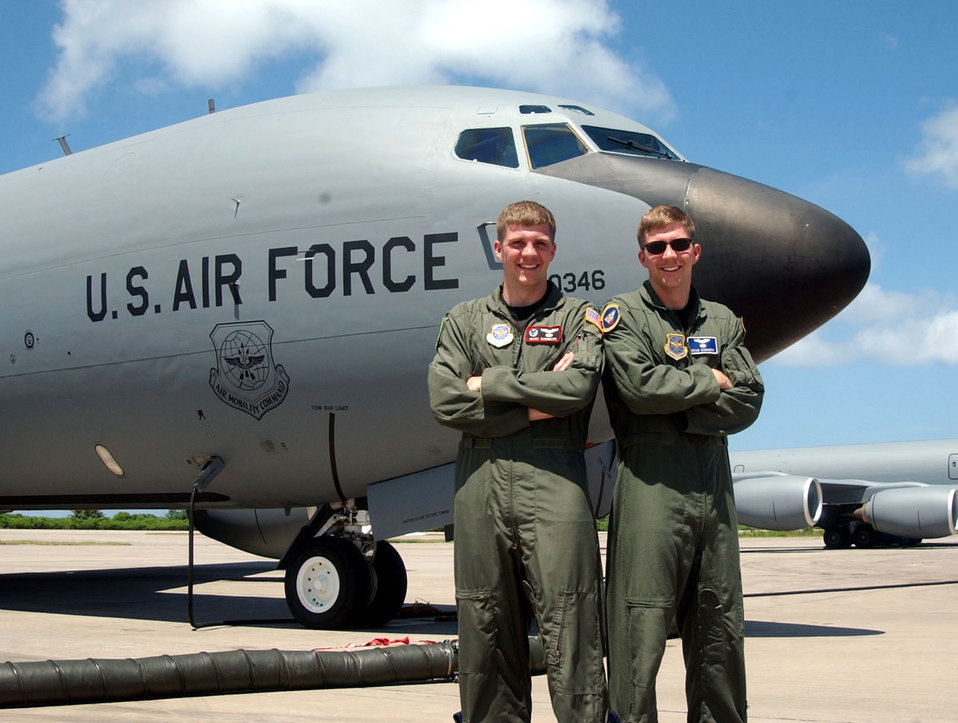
Twin co-pilots support Operation Enduring Freedom

OPERATION ENDURING FREEDOM -- First Lts. Marc and Brad Summers, identical twins, recently flew missions together supporting Operation Enduring Freedom. Marc is assigned to the 28th Expeditionary Air Refueling Squadron at a forward-deployed location, and Brad is assigned to the 32nd Air Refueling Wing at McGuire Air Force Base, N.J.